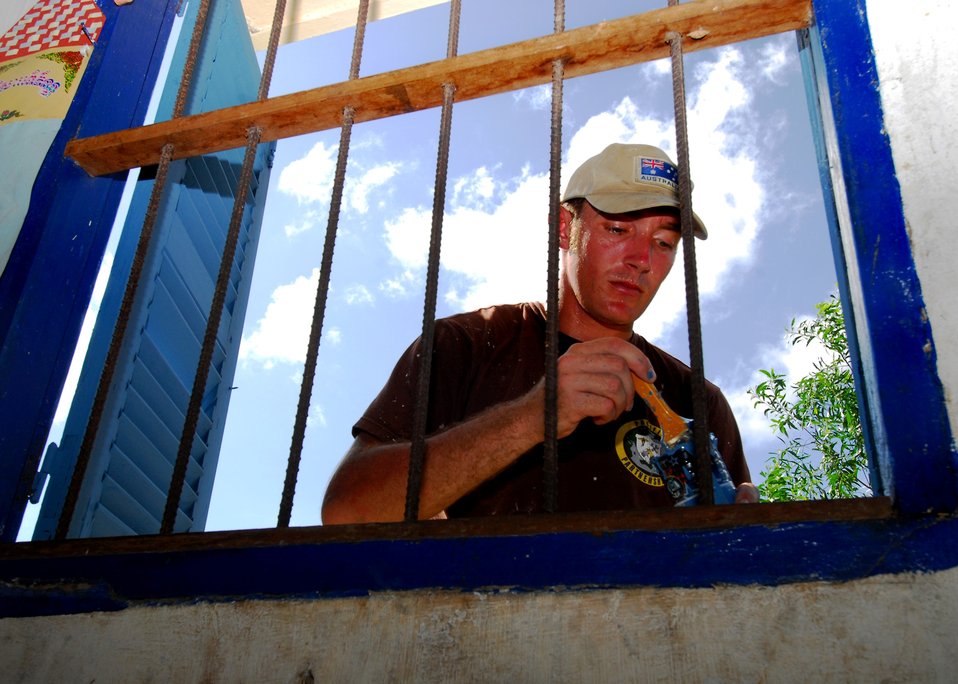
U.S. Army Combat Engineer Lance Cpl. Sam Marshall dips his paint brush into a paint container during an engineering civic action event at O. Tres Chas Primary School in Sihanoukville, Cambodia, on June 24, 2010. The Military Sealift Command hospital ship, USNS Mercy (T-AH 19), is in Cambodia in support of Pacific Partnership 2010.